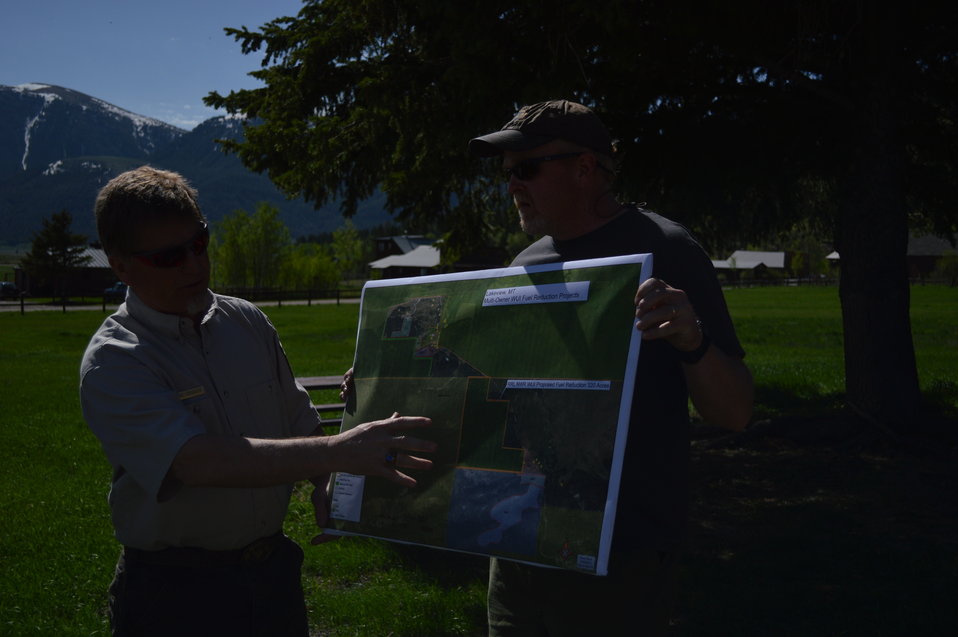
Regional Leadership Visit to Montana 2014